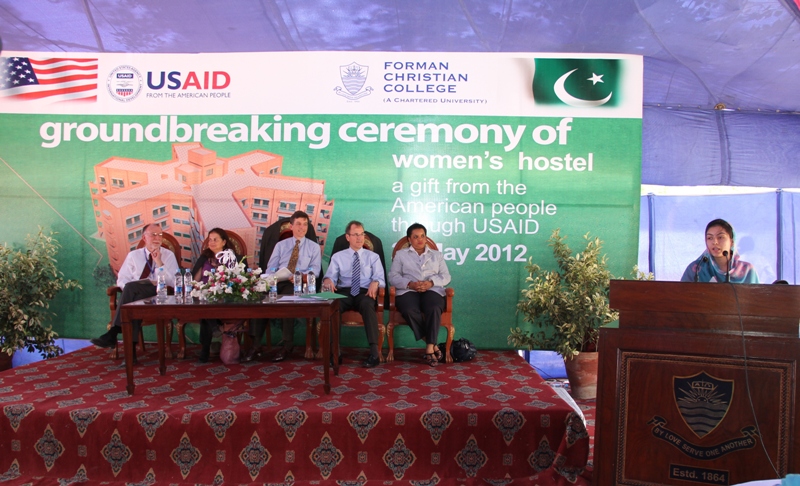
Mr. Richard A. Albright (Coordinator of Development Assistance), Nina Fite (U.S. Consul General), Dr. Andrew Sisson,Ms. Gail Spence (Acting Director USAID Punjab) at the ceremony.